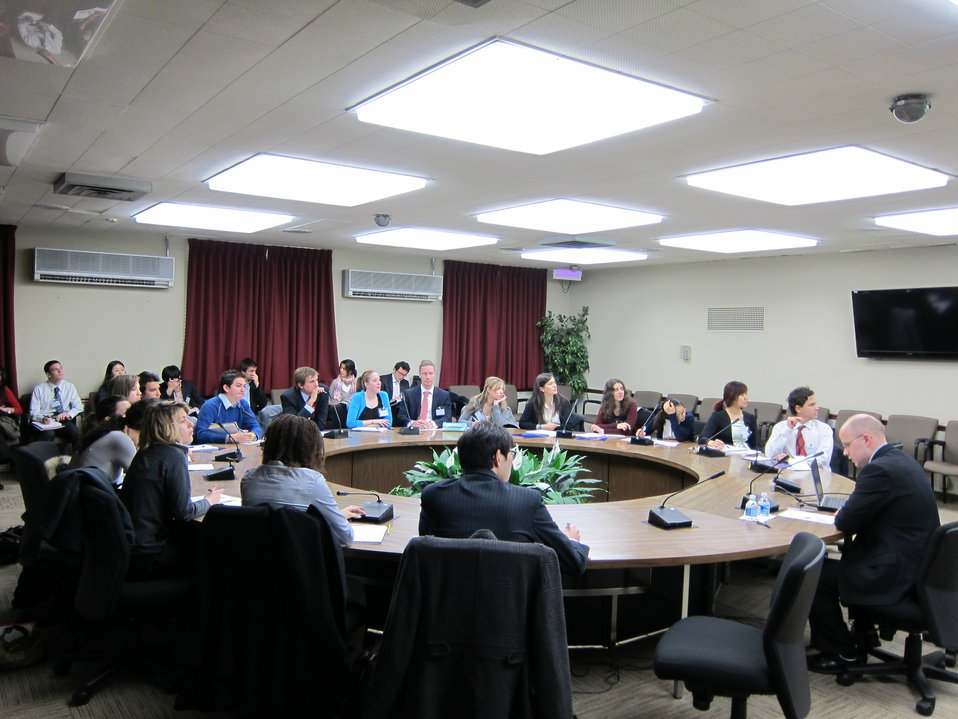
Officer Hays Meets With American University Students

Economic, Energy and Business Officer Officer Clayton Hays meets with American University students to discuss China, at the U.S. Department of State in Washington, D.C., in March 2011.